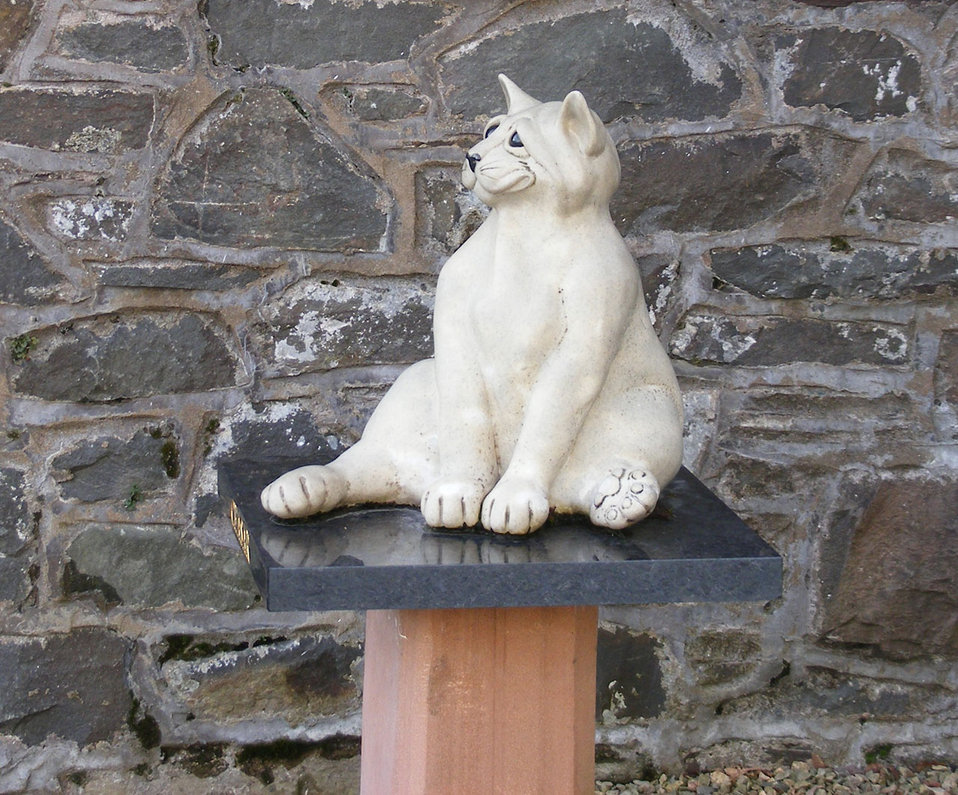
Caesar the town cat

Caesar in memorium to him.